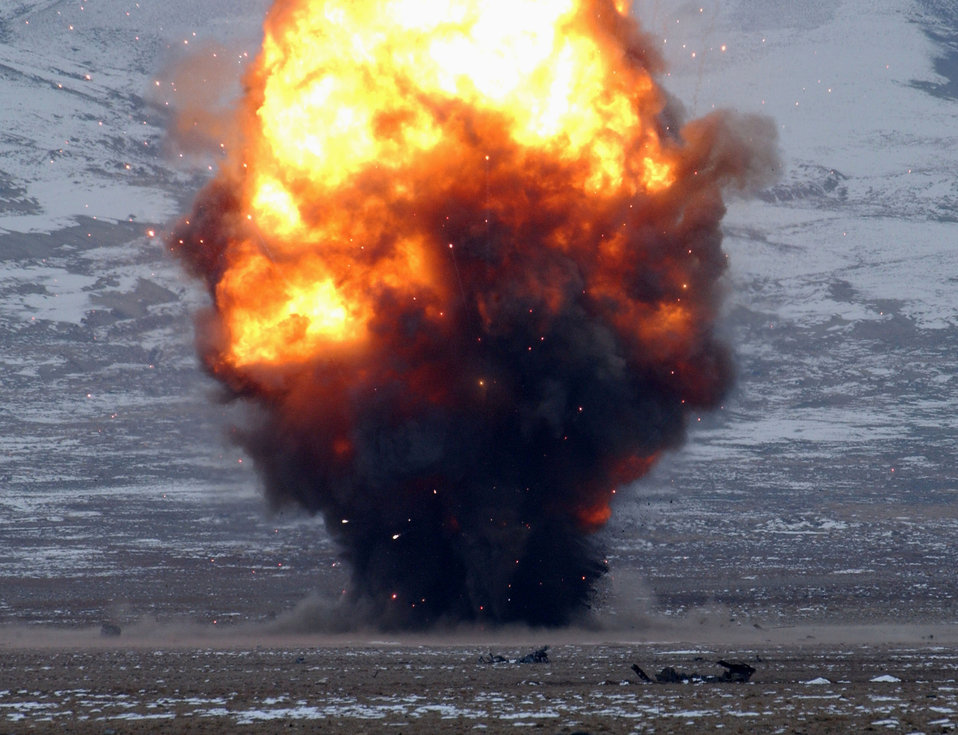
EOD Airmen destroy explosives

BAGRAM AIR BASE, Afghanistan -- More than 1,000 pounds of explosives light up the sky near here Jan. 23, as 455th Expeditionary Civil Engineer Squadron Explosive ordnance disposal Airmen destroy everything from small arms, aircraft ammunition and rockets, to Howitzer casings, large projectiles, rifle grenades and anti-tank mines.